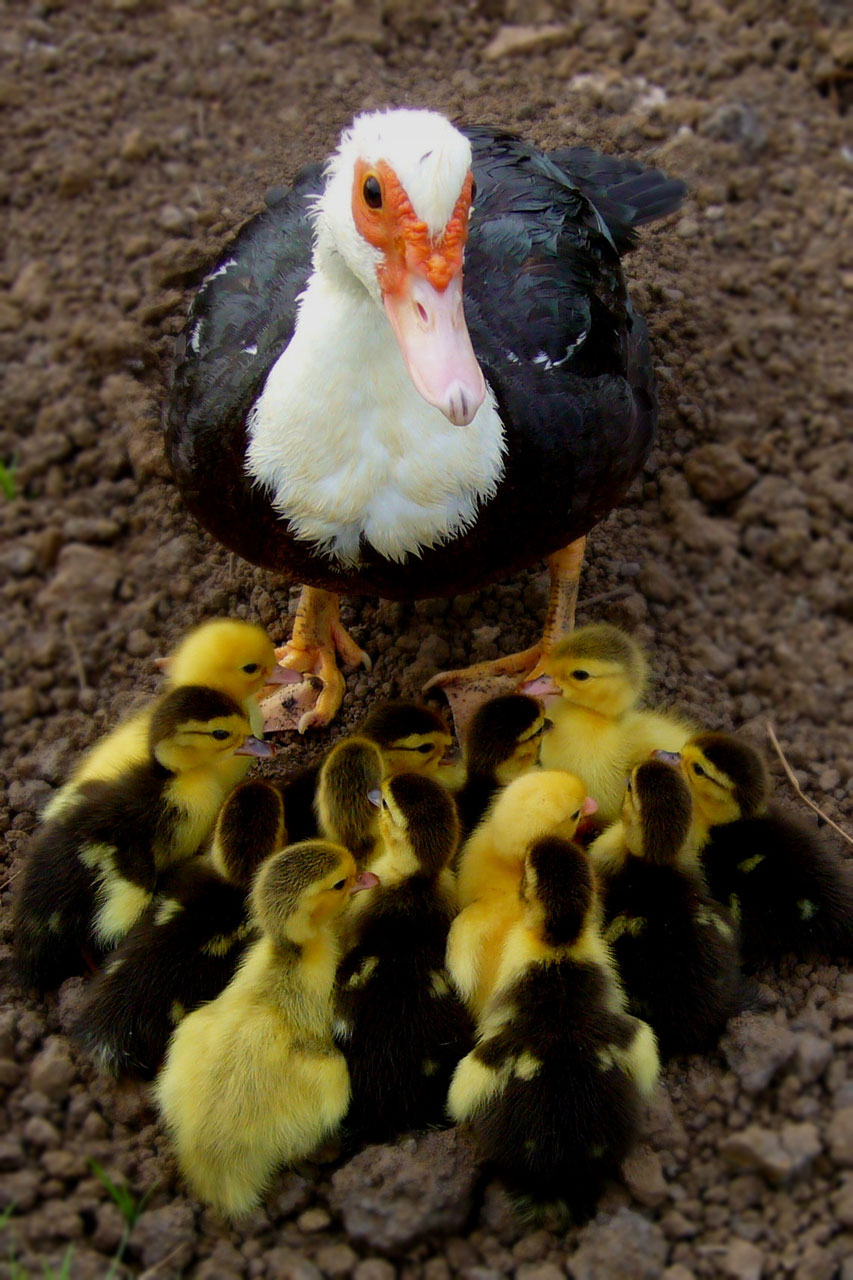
Duck with ducklings.